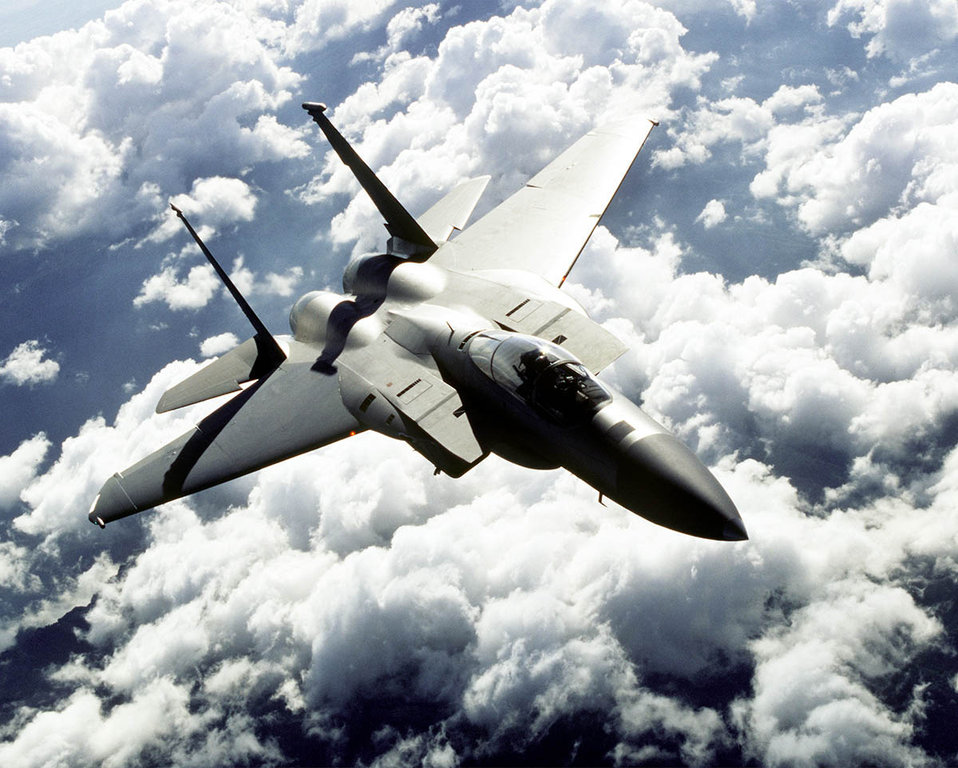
F-15 Eagle

FILE PHOTO -- The F-15 Eagle is an all-weather, extremely maneuverable, tactical fighter designed to gain and maintain air superiority in aerial combat. The Eagle's air superiority is achieved through a mixture of unprecedented maneuverability and acceleration, range, weapons and avionics. It can penetrate enemy defense and outperform and outfight any current or projected enemy aircraft.